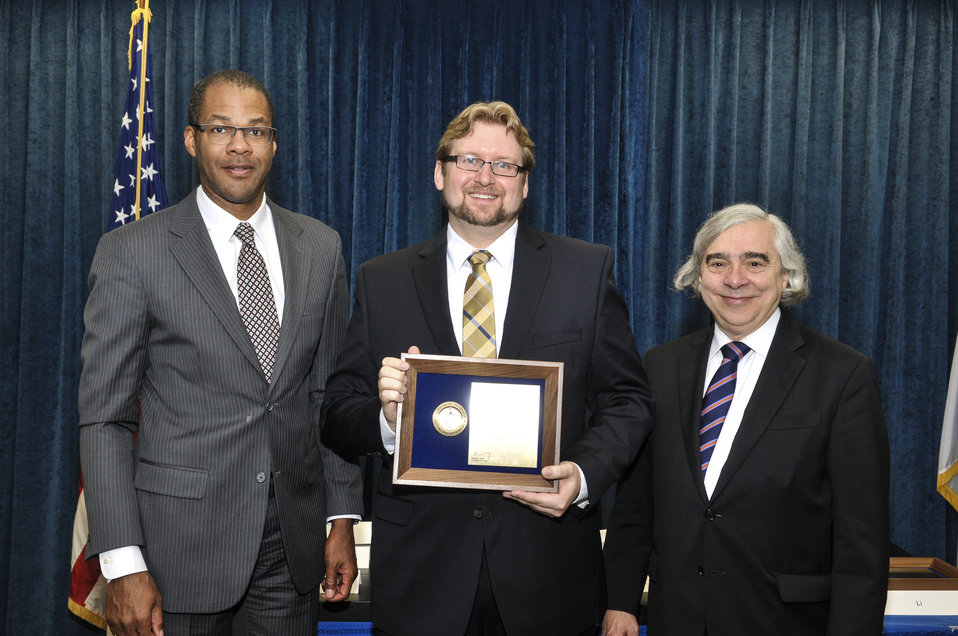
PECASE Awards: DOE Secretary E. Moniz with DOE Office of Fossil Energy Principal Deputy Assistant Secretary Christopher Smith, PECASE Awardee Brian J. Anderson on April 14, 2014